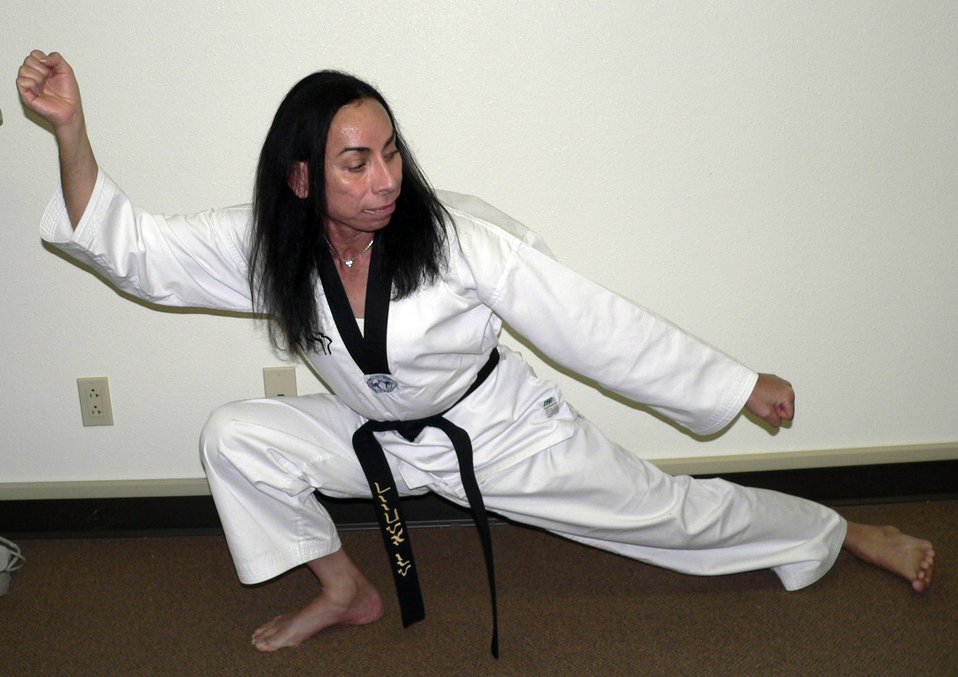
Black belt

KIRTLAND AIR FORCE BASE, N.M. (AFPN) -- Jolee AlVillar performs a Taekwondo move. Taekwondo is a Korean martial art. The Air Force Research Laboratory employee went to South Korea, tested with a grandmaster and received her 4th degree black belt rank.